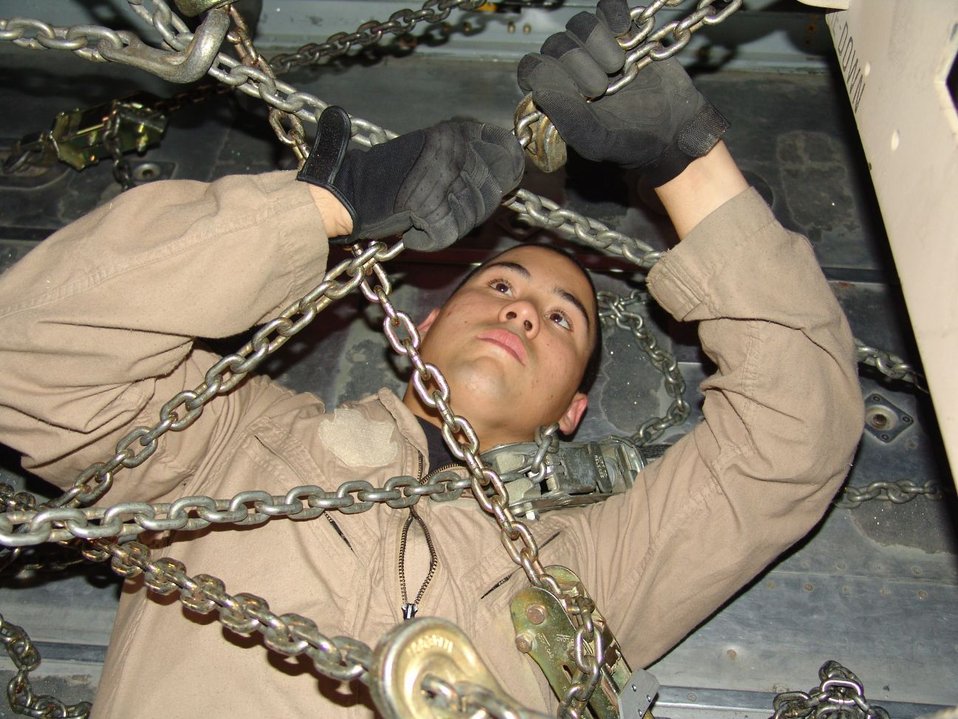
A chain reaction

SOUTHWEST ASIA -- Airman 1st Class Thomas Miller connects chains to two armored Humvees on a C-130 Hercules for delivery to ground forces in Iraq. He is a loadmaster with the 737th Expeditionary Airlift Squadron at a forward-deployed location and is from the 41st Airlift Squadron at Pope Air Force Base, N.C.